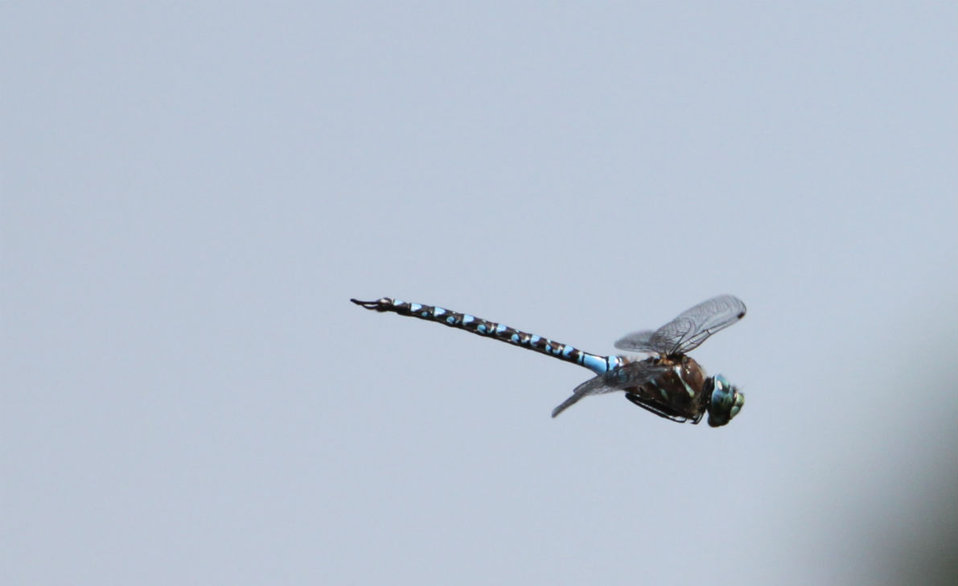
Variable Darner

Aeshna interrupta hovering at cattail/open water boundary of Refuge wetlands.